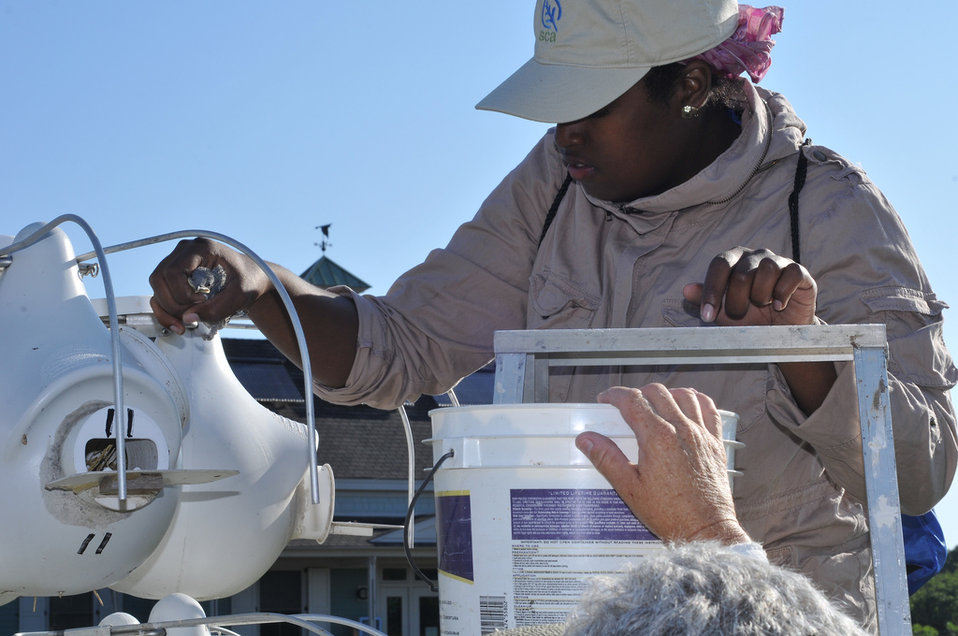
Banding purple martins

U.S. Fish and Wildlife Service